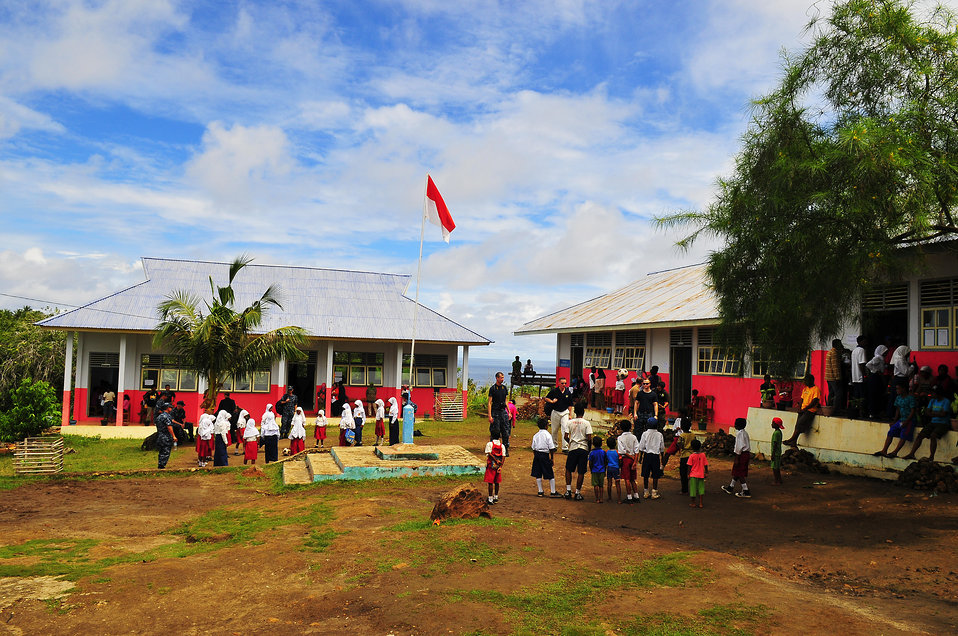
Local Indonesian children gather to play soccer during a medical civic action program conducted by crew members of the Military Sealift Command hospital ship USNS Mercy (T-AH 19) on July 21, 2010, in Ternate, Indonesia. Mercy is deployed for Pacific Partnership 2010, the fifth in a series of annual U.S. Pacific Fleet endeavors conducted in Indonesia as a disaster relief exercise aimed at strengthening regional partnerships.